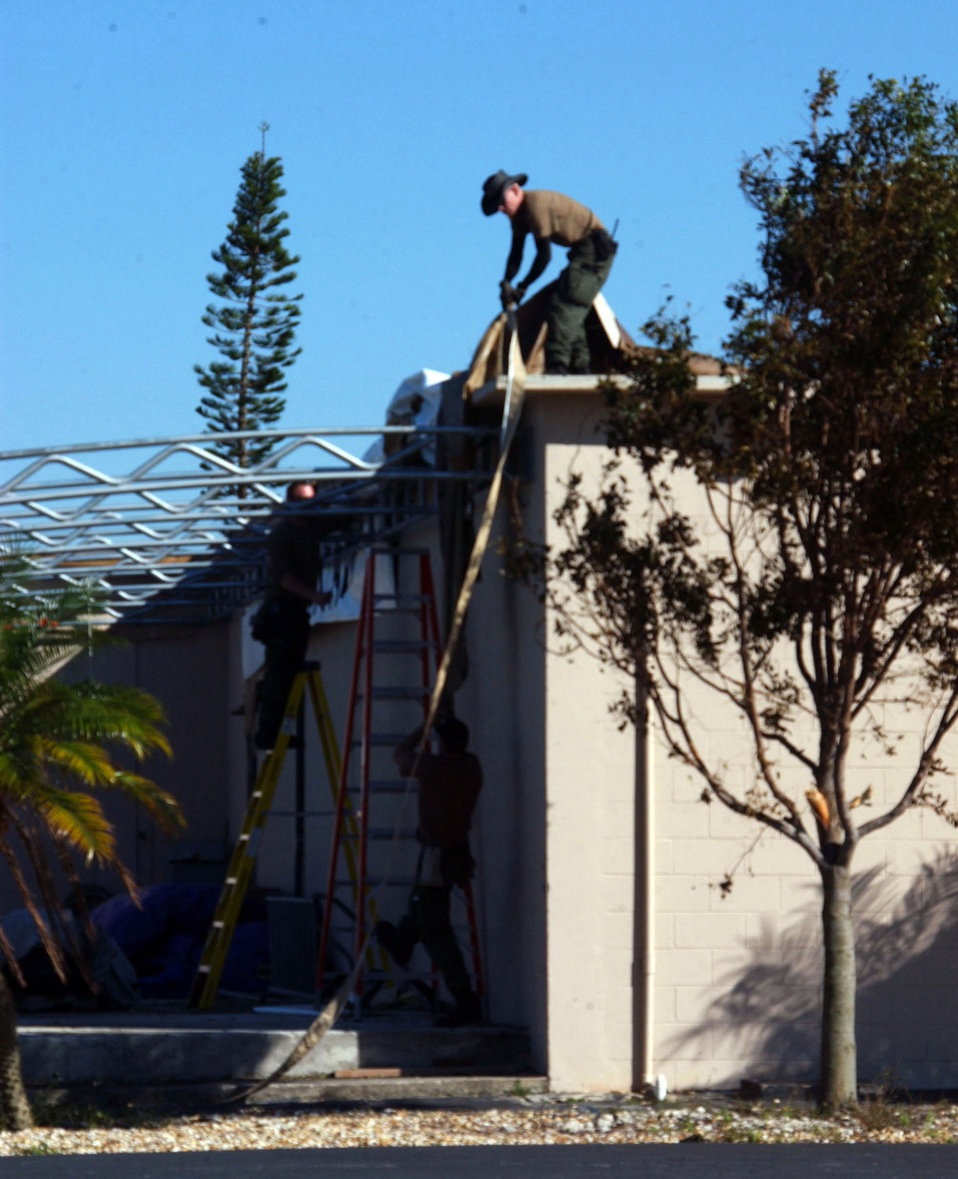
Wilma relief

HOMESTEAD AIR RESERVE BASE, Fla. (AFPN) -- The Hurricane Wilma clean-up process began immediately after the storm passed here. As part of the clean-up, several base agencies moved into different buildings to ensure the continuity of mission-essential functions. Wilma hit the base Oct. 24.